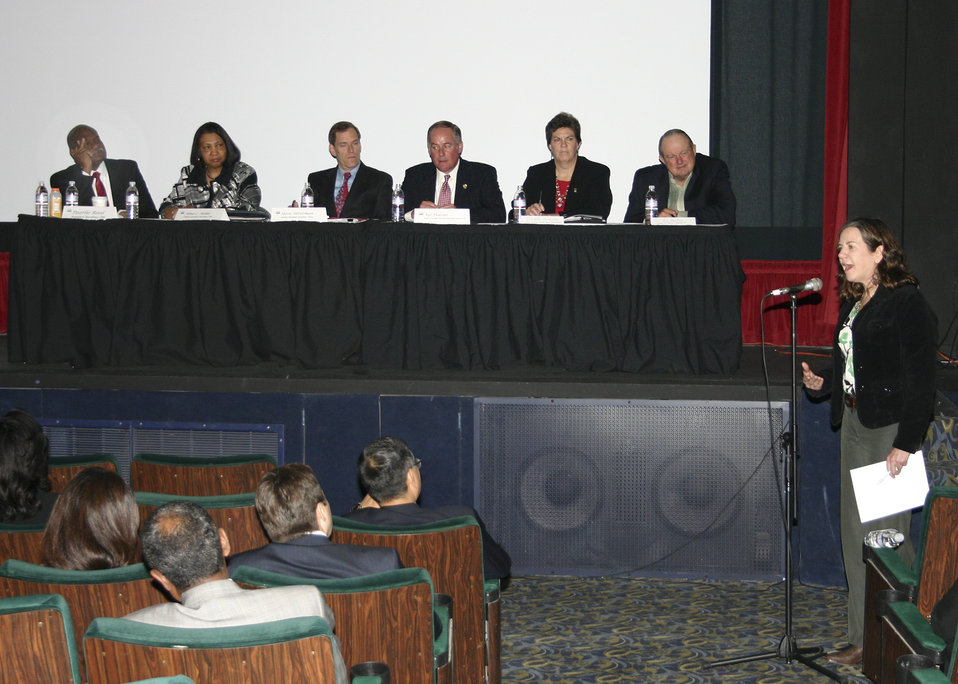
10di1298-Davis Cultural Trans 031

The U.S. Department of Agriculture (USDA) held the Cultural Transformation Employee listening sessions in Davis, CA, on Monday, April 12, 2010. USDA employees expressed their concerns with issues at the Department and made suggestions for correcting them and improving the image of USDA. USDA photo 10di1298-031.